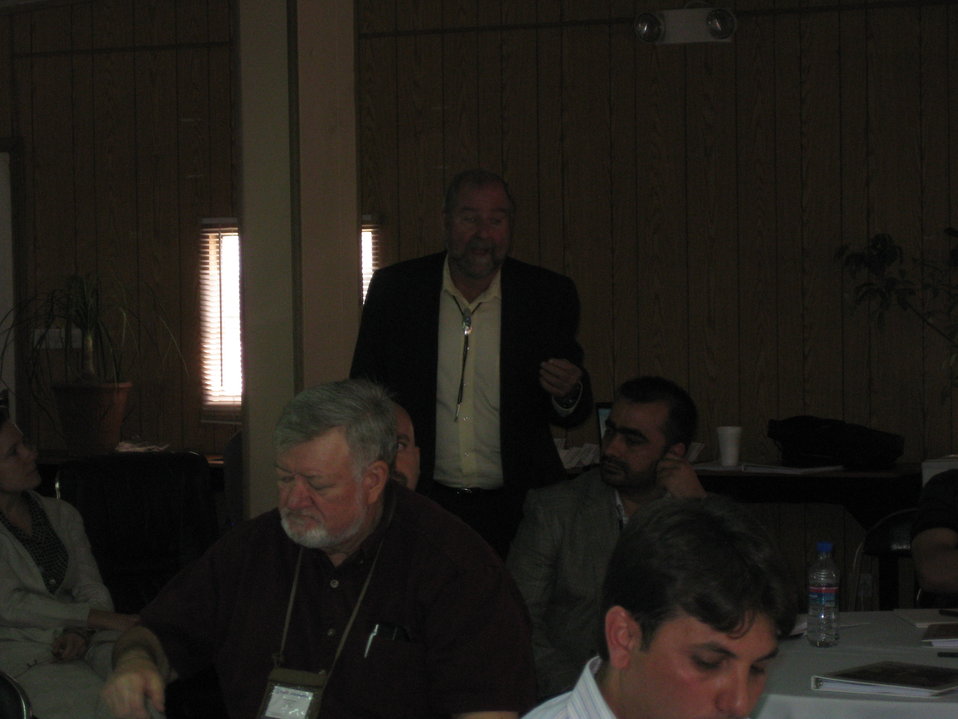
Afghan Youth Voices 019